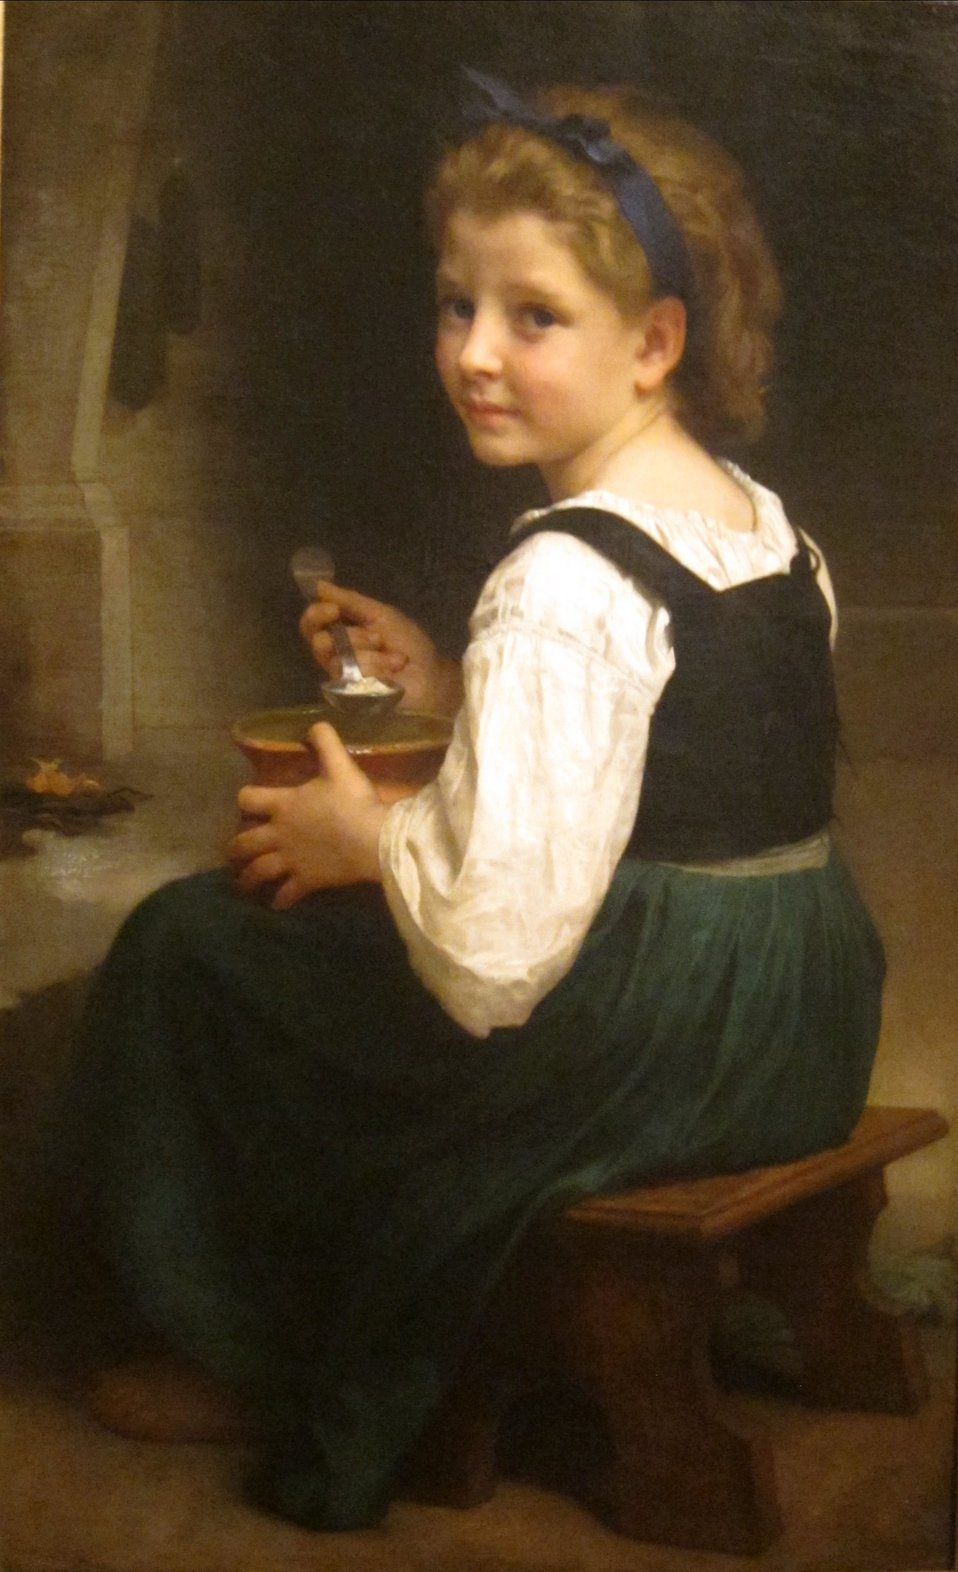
'Girl Eating Porridge' by William Adolphe Bouguereau, Cincinnati Art Museum